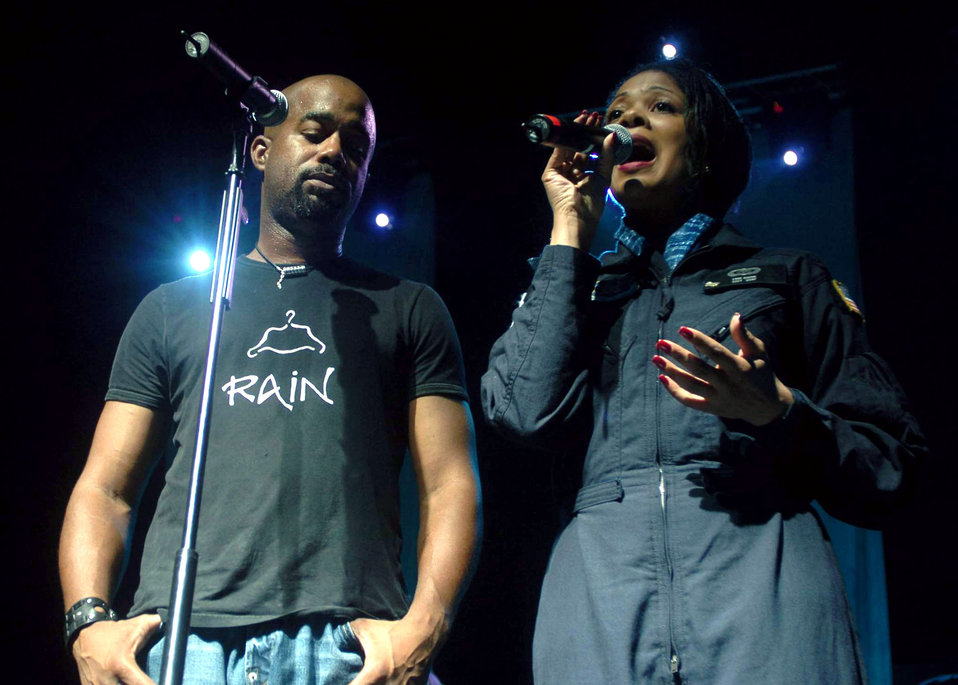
Give a hoot

YOKOTA AIR BASE, Japan -- Darius Rucker, lead singer of Hootie and the Blowfish, listens to Staff Sgt. Tami Bonne sing